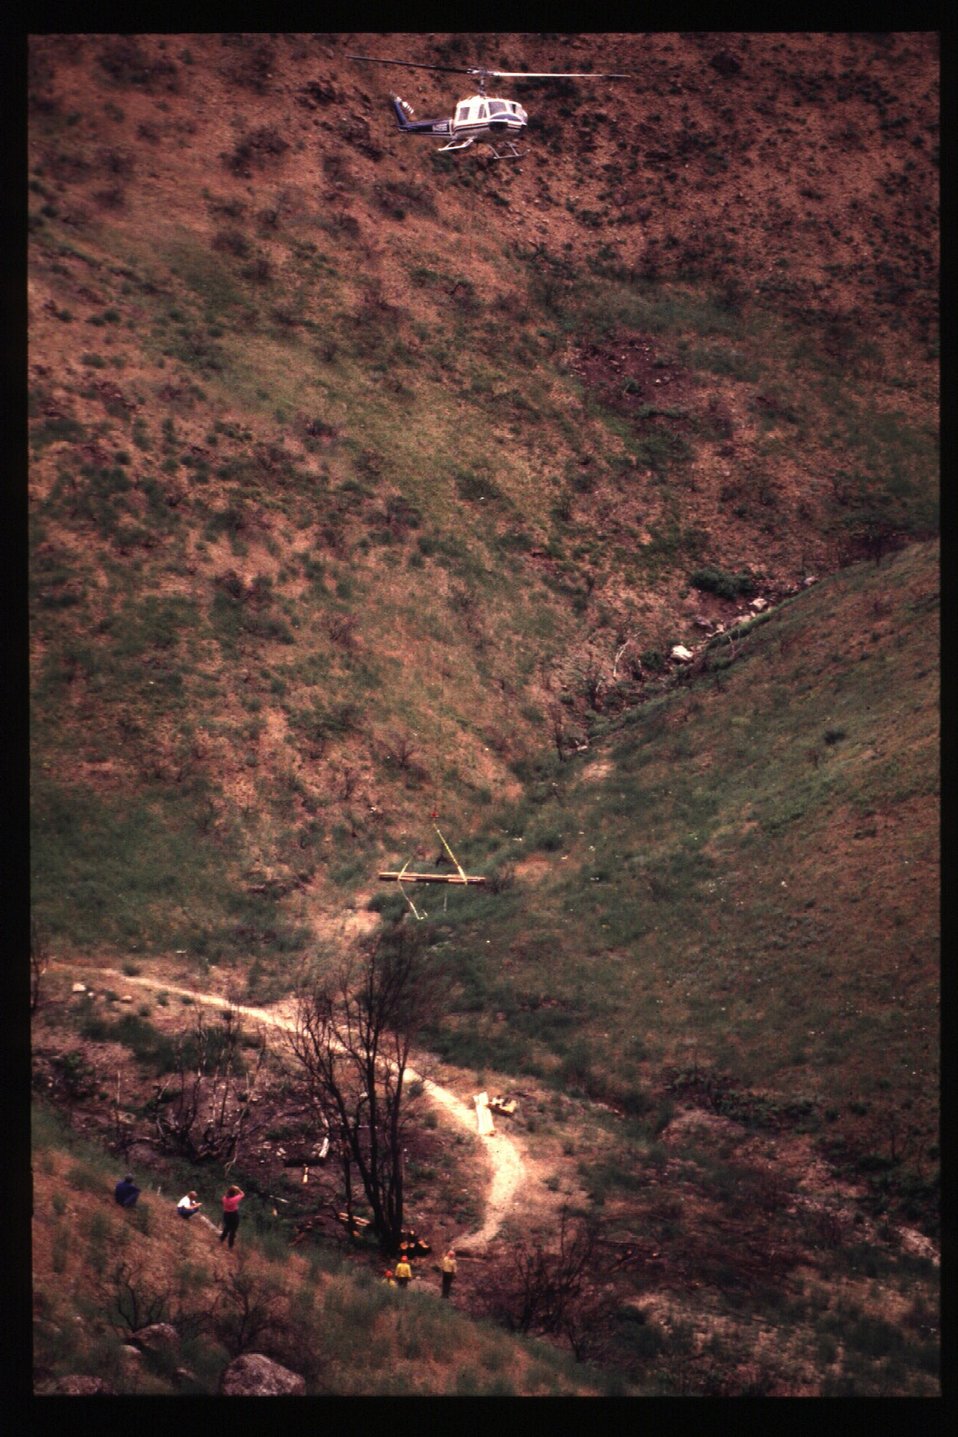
8th Street Fire Helicopter Four Rivers Field Office LSRD Lower Snake River District